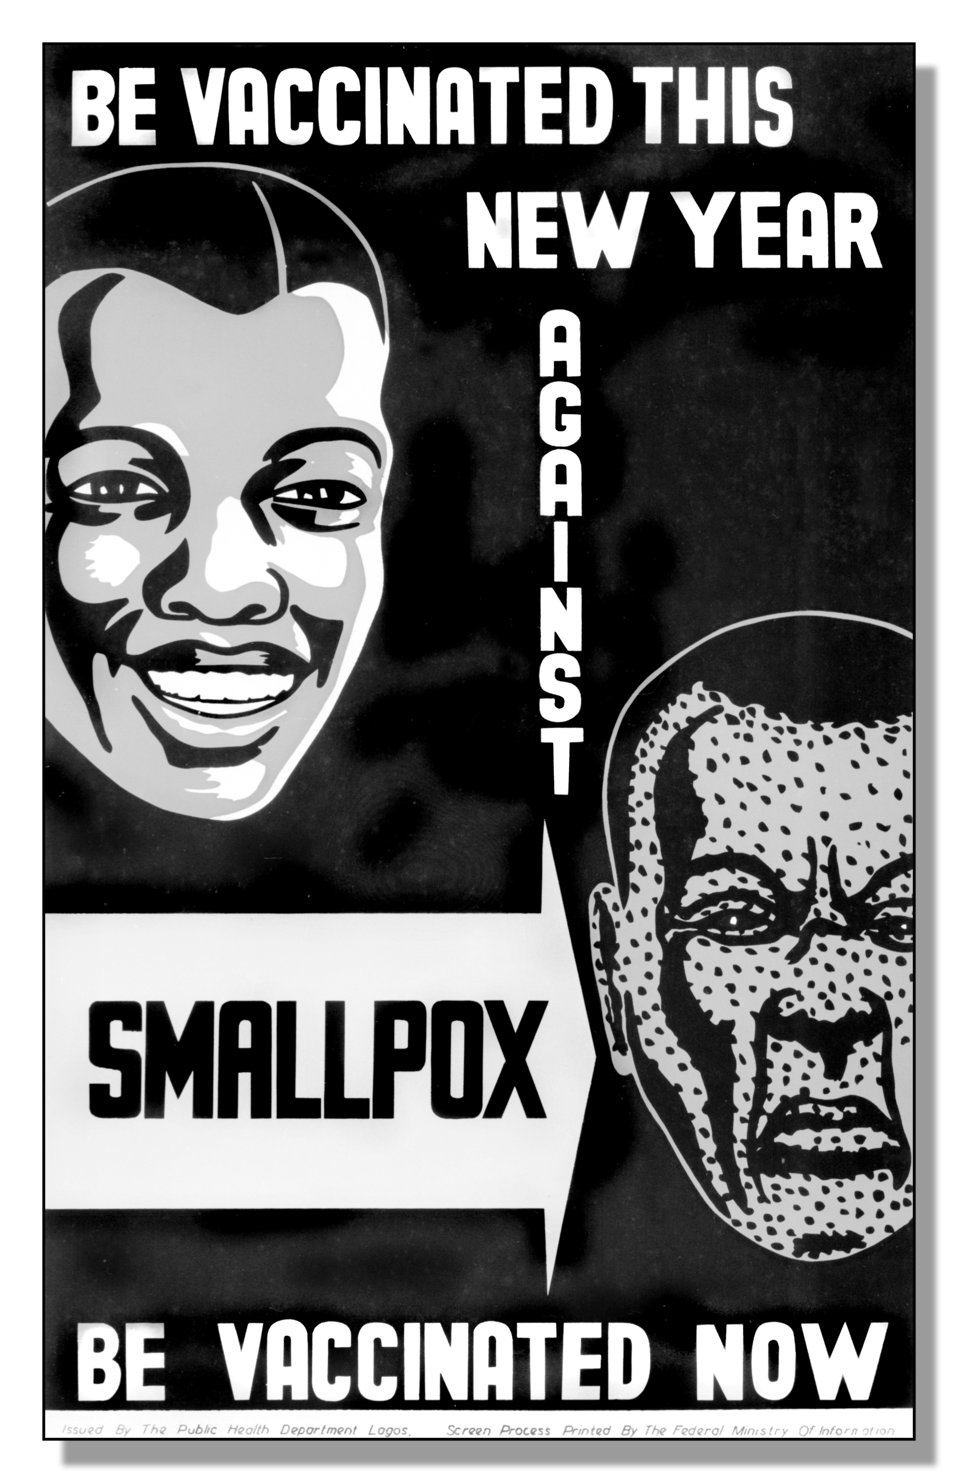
Poster created prior to 1979 promoting the importance of Smallpox/Measles vaccination.